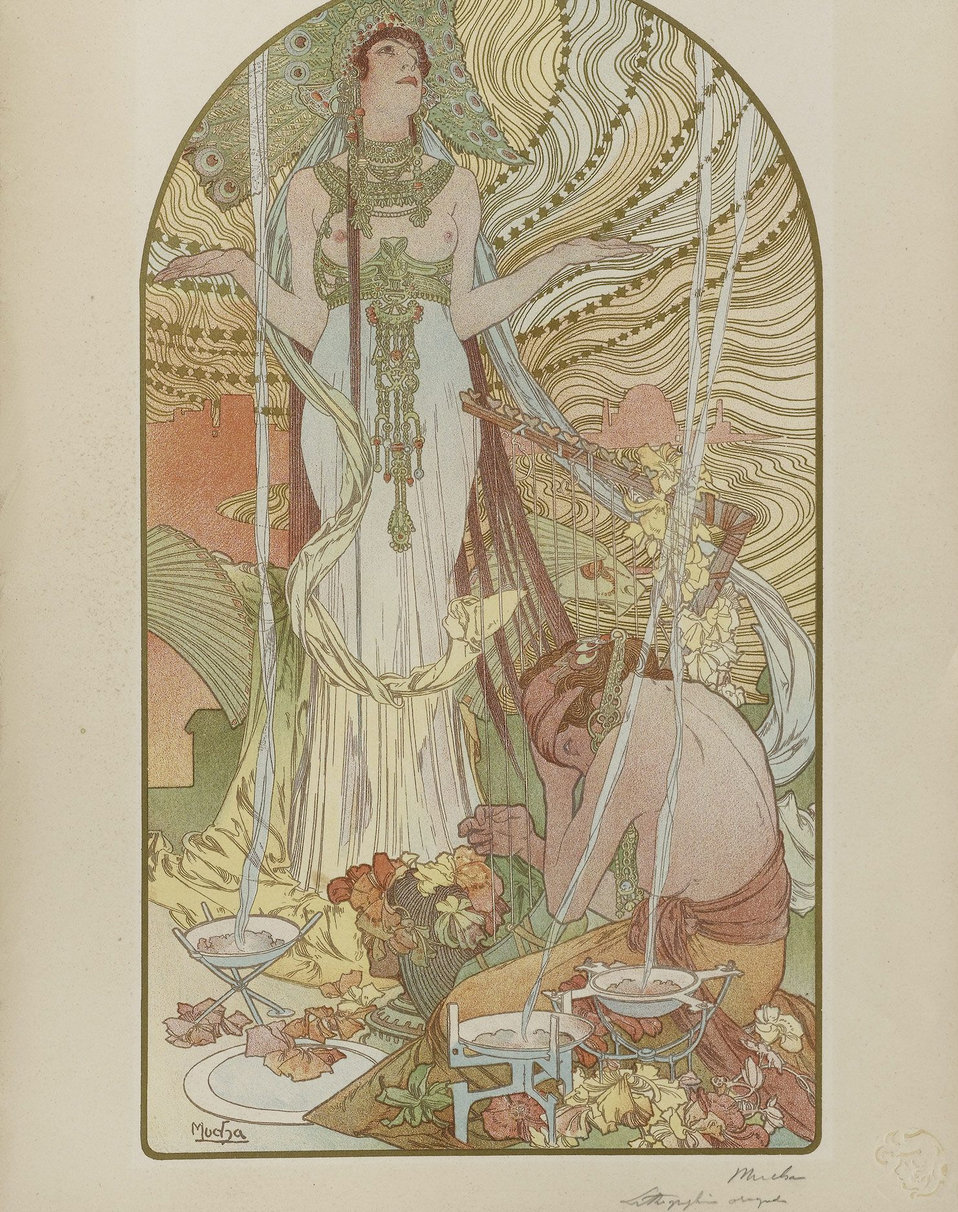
Salammbô. Lithographie couleurs. Signé Mucha au crayon dans la marge en bas à droite et dans la pierre en bas à gauche. 37,5x21,5 cm.